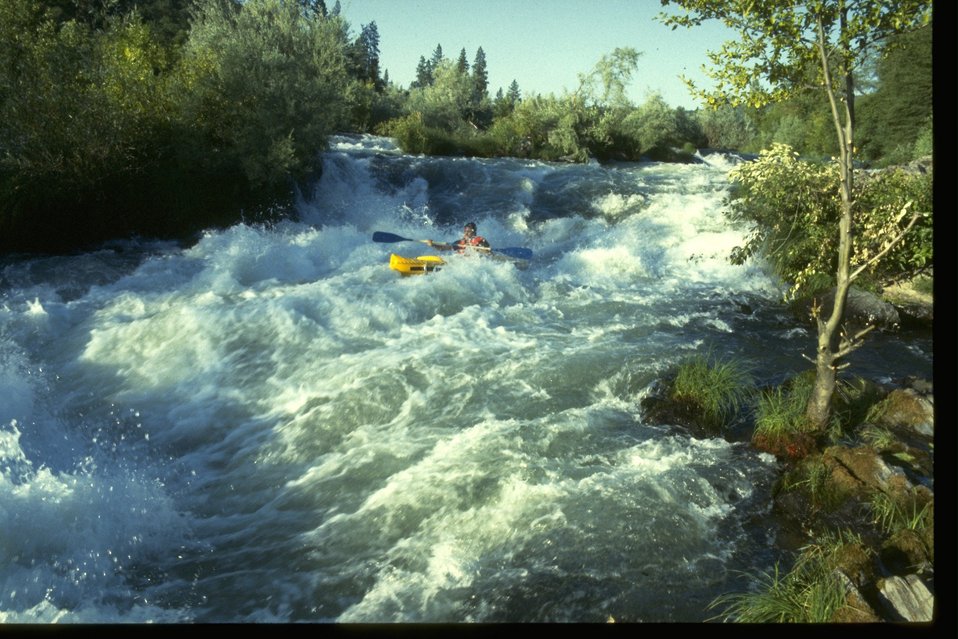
Kayaking on the whitewater rapids of Nugget Falls on the Rogue River.